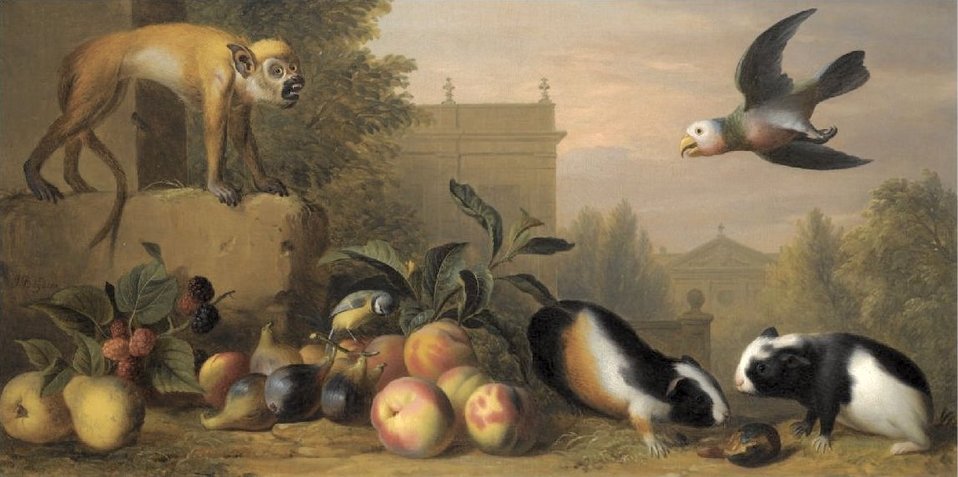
'Capuchin squirrel monkey, two guinea pigs, a blue tit and an Amazon St. Vincent parrot with Peaches, Figs and Pears in a landscape'